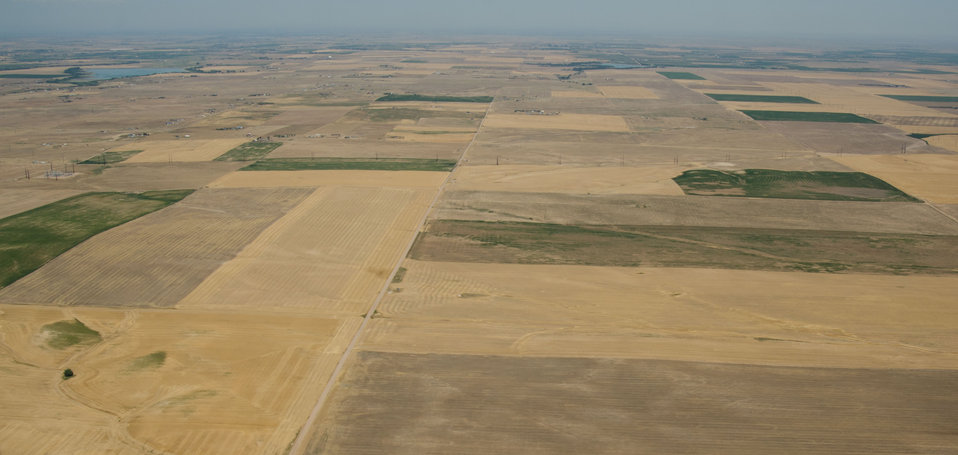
Aerial views of drought affected Colorado farm lands, 71 miles east of Denver, Colorado on Saturday, July 21, 2012.